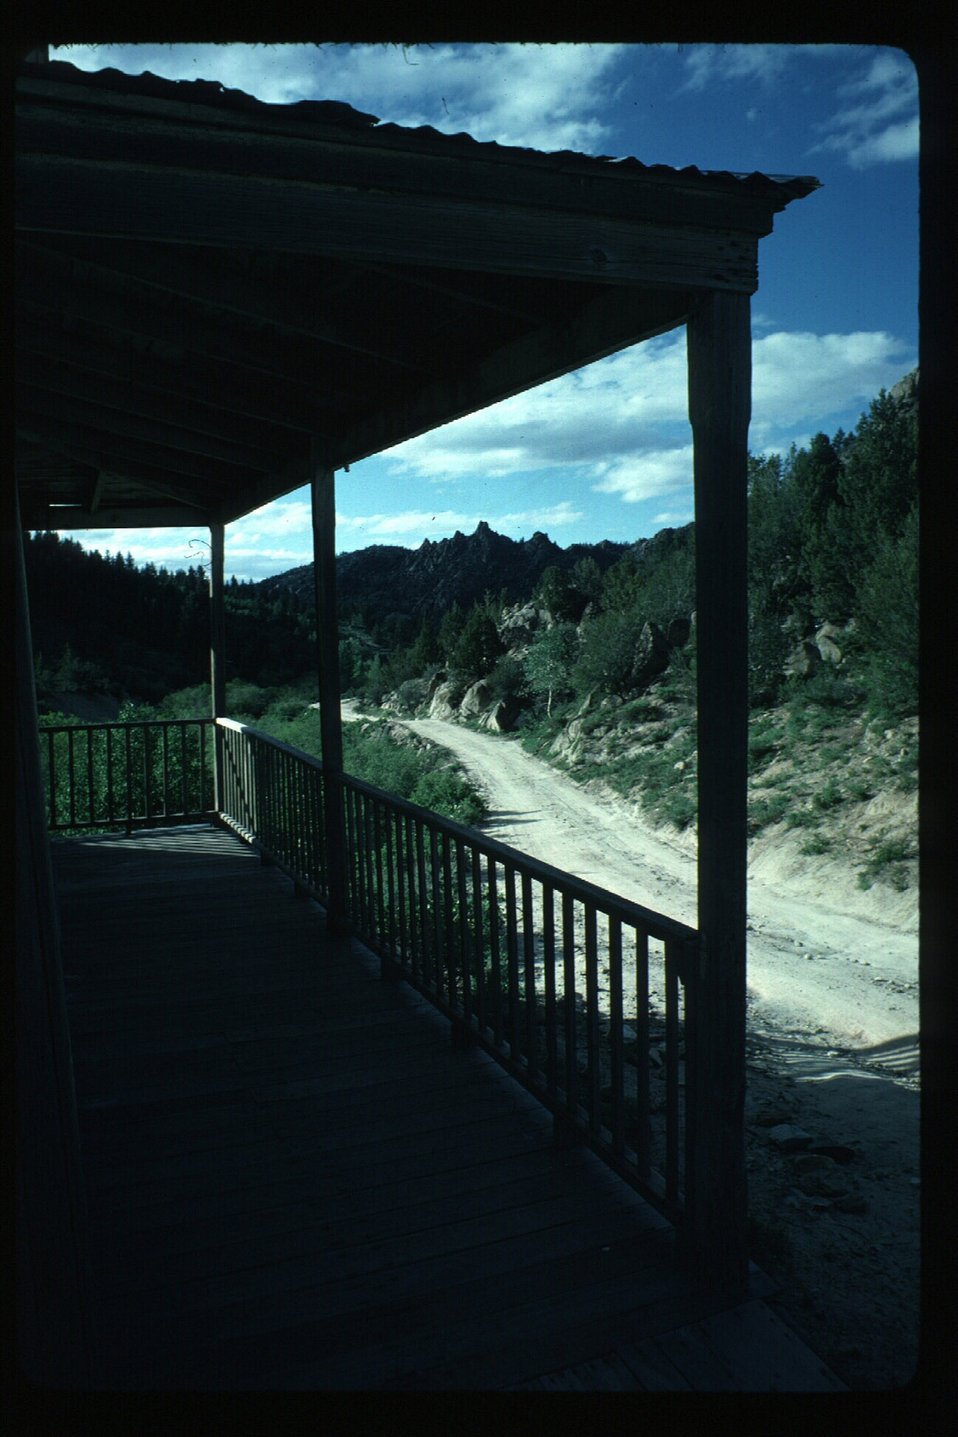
Architecture Silver City Cultural Resources Owyhee Field Office LSRD Lower Snake River District